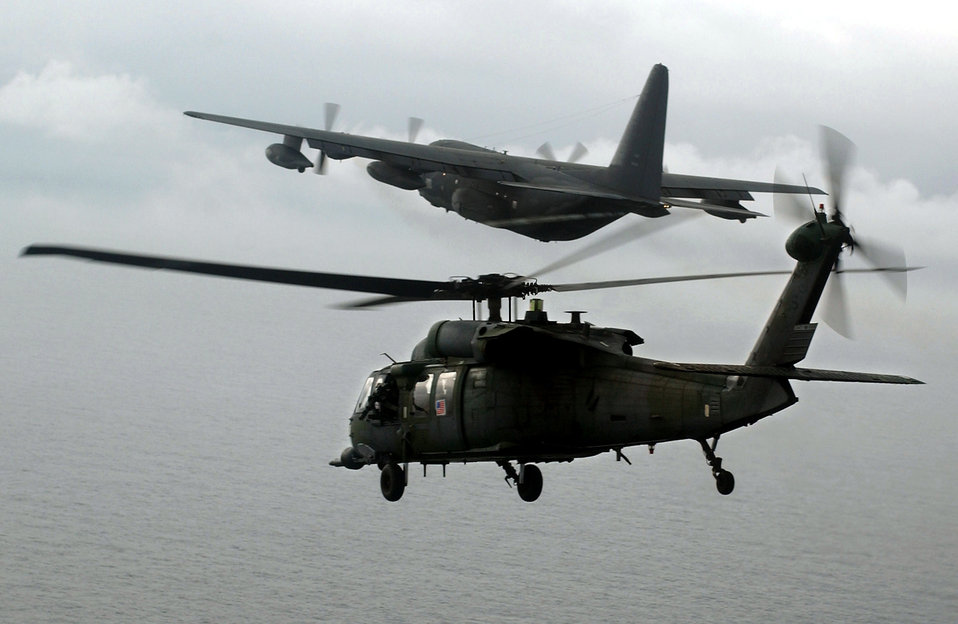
Refueling mission

LUNGI, Sierra Leone -- An HH-60G Pave Hawk helicopter prepares for aerial refueling from an Air Force MC-130P Combat Shadow after a evacuation mission into the U.S. Embassy in Monrovia, Liberia, on July 28. The 398th Air Expeditionary Group is currently in Sierra Leone to provide personnel recovery and emergency evacuation capability for the humanitarian assistance survey team and the fleet antiterrorism security team in Liberia. The HH-60G is from the 56th Rescue Squadron at Naval Air Station Keflavik, Iceland, and the MC-130P is from the 352nd Special Operations Group at Royal Air Force Mildenhall.